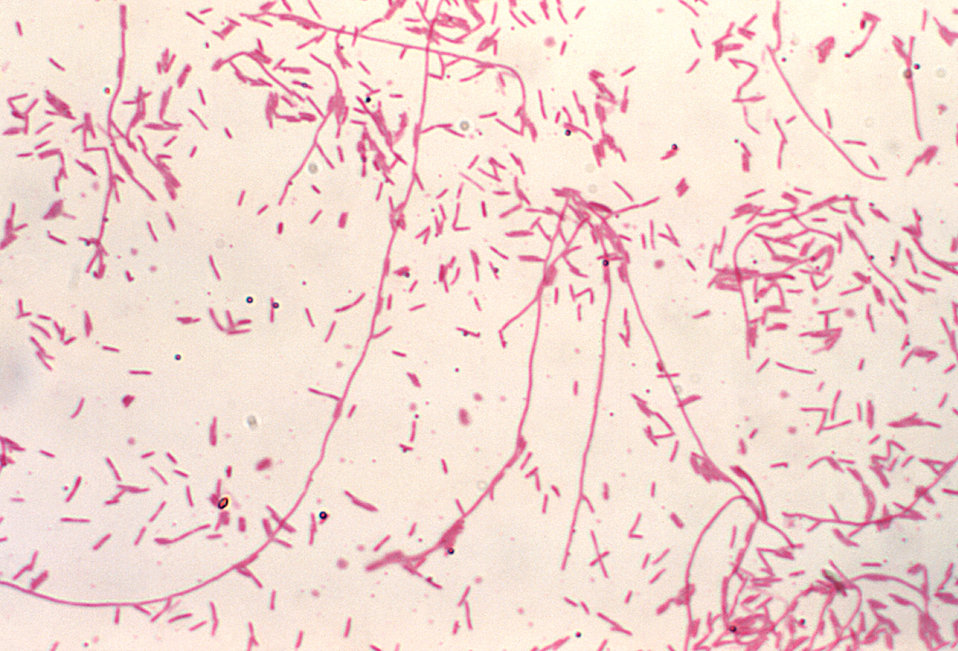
This Gram-stained micrograph reveals chains, and solitary Gram-negative Legionella pneumophila bacteria found within a sample taken from a victim of the 1976 Legionnaires' disease outbreak in Philadelphia.